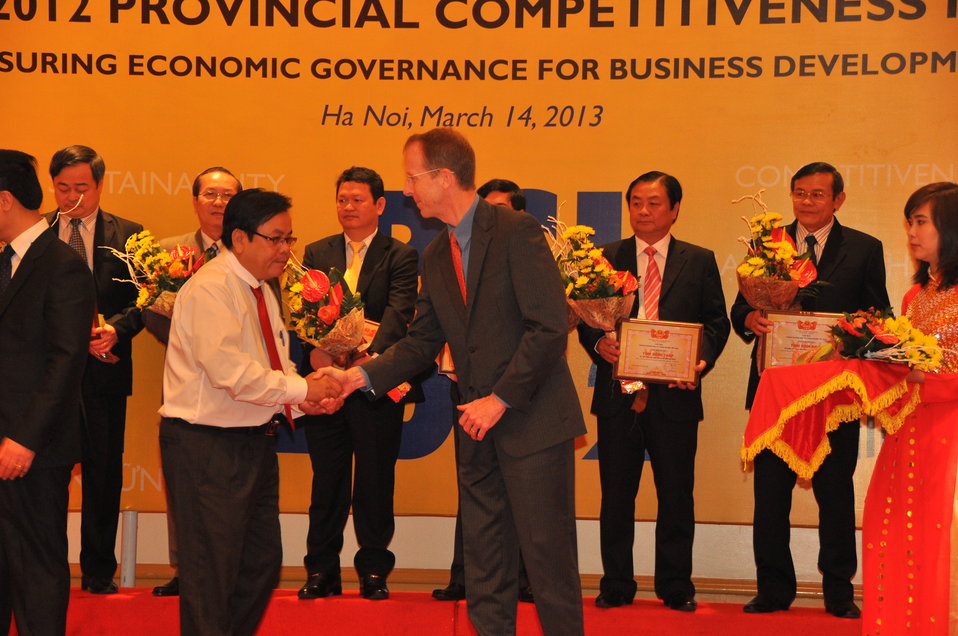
Provincial Competitiveness Index Launch, March 14, 2013

Hanoi, March 14, 2013